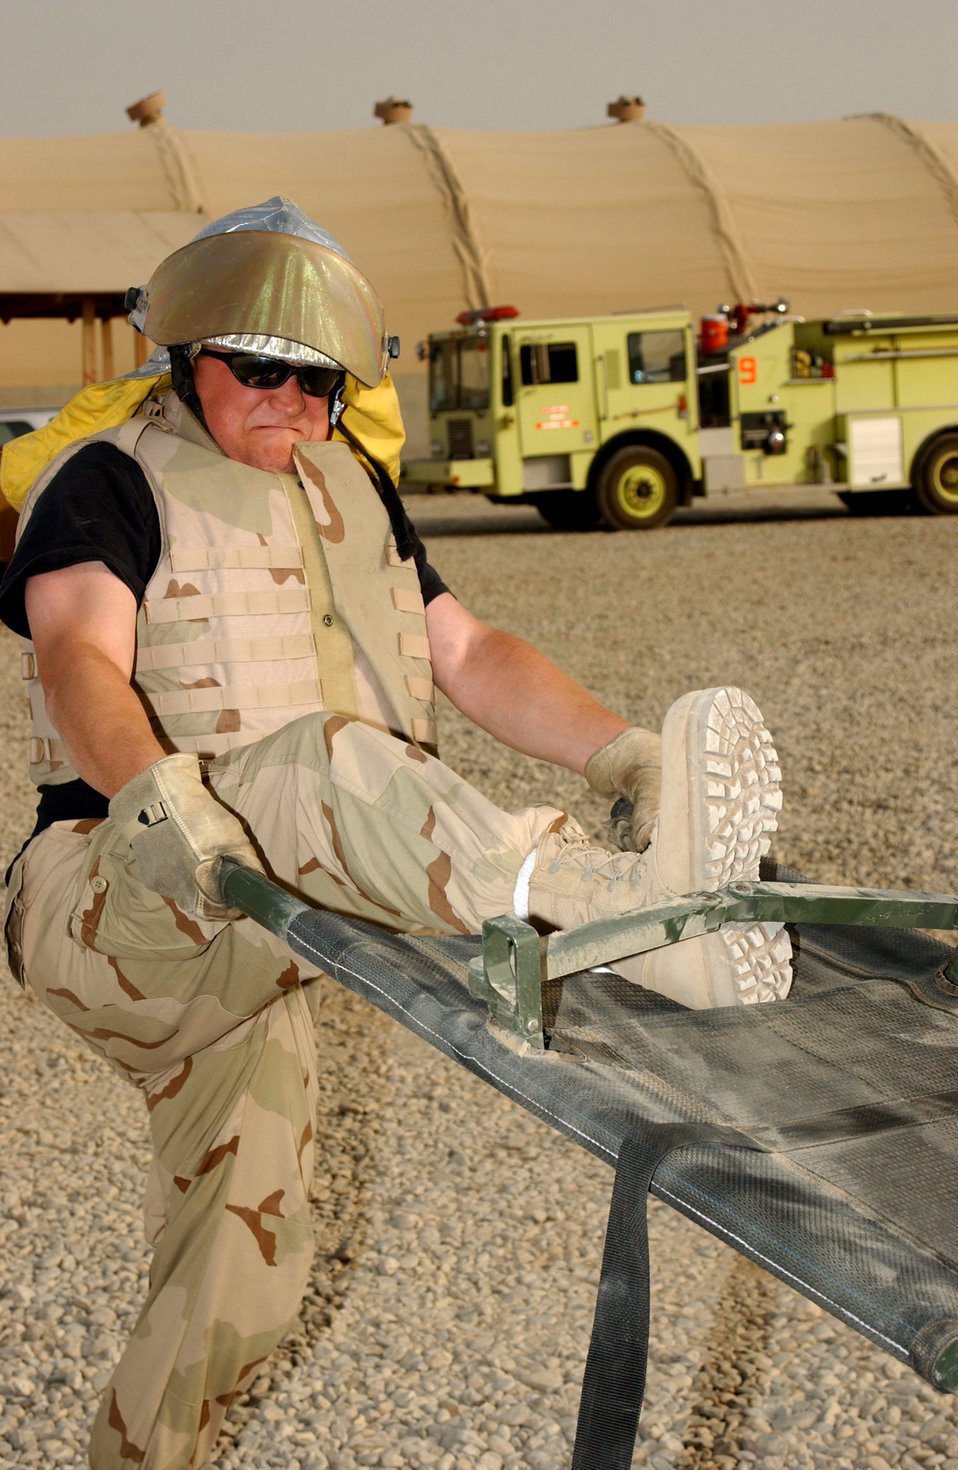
Operation Iraqi Freedom

ALI BASE, Iraq (AFPN) -- Senior Airman David Grogan strains to lock a stability bar into place for a litter to evacuate (training) victims here. The fire and rescue department firefighter took part in an Oct. 20 mass casualty exercise.